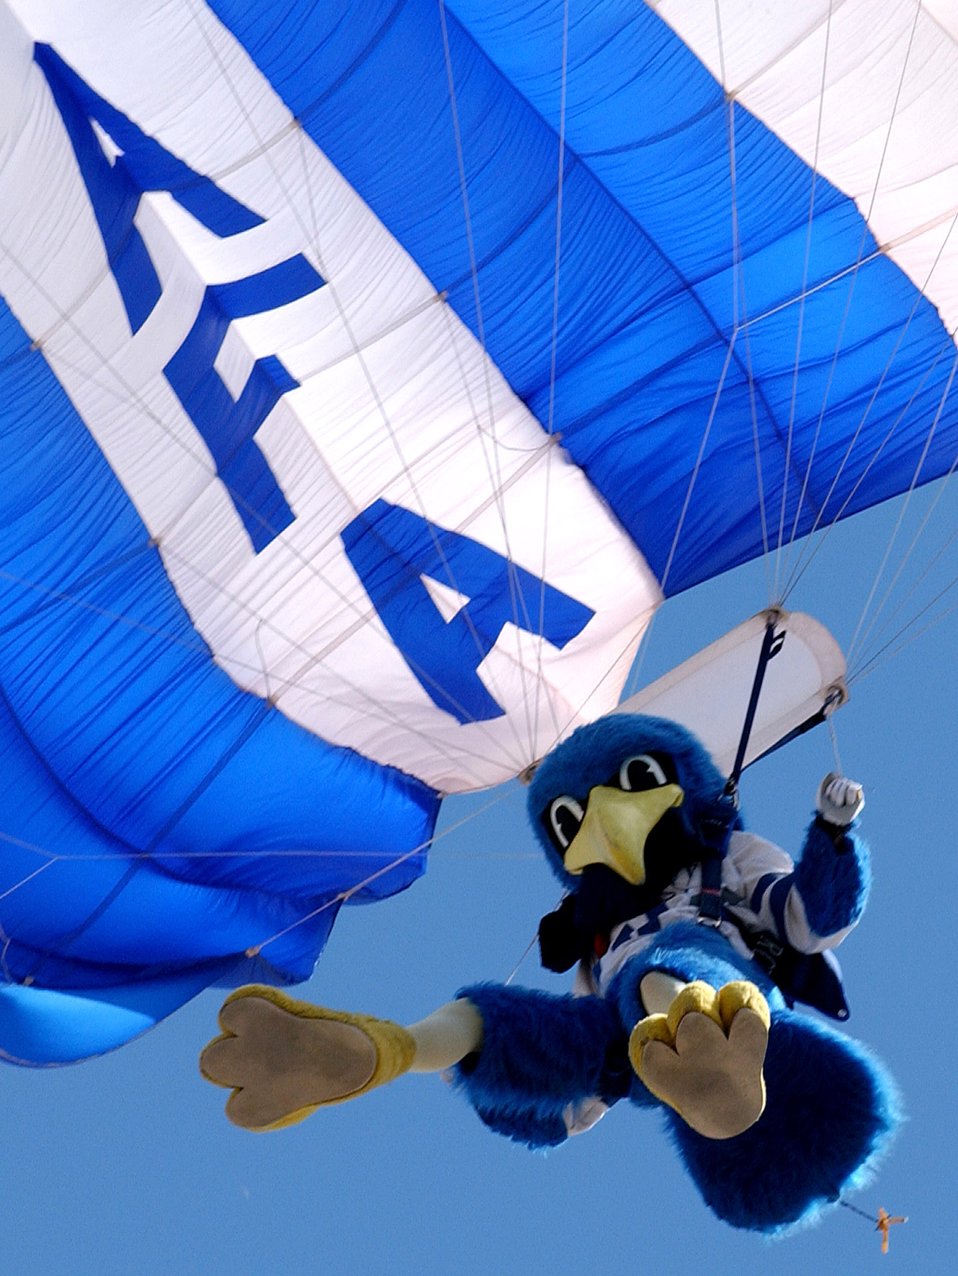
Falcon mascot competes again

Air Force Academy Mascot,